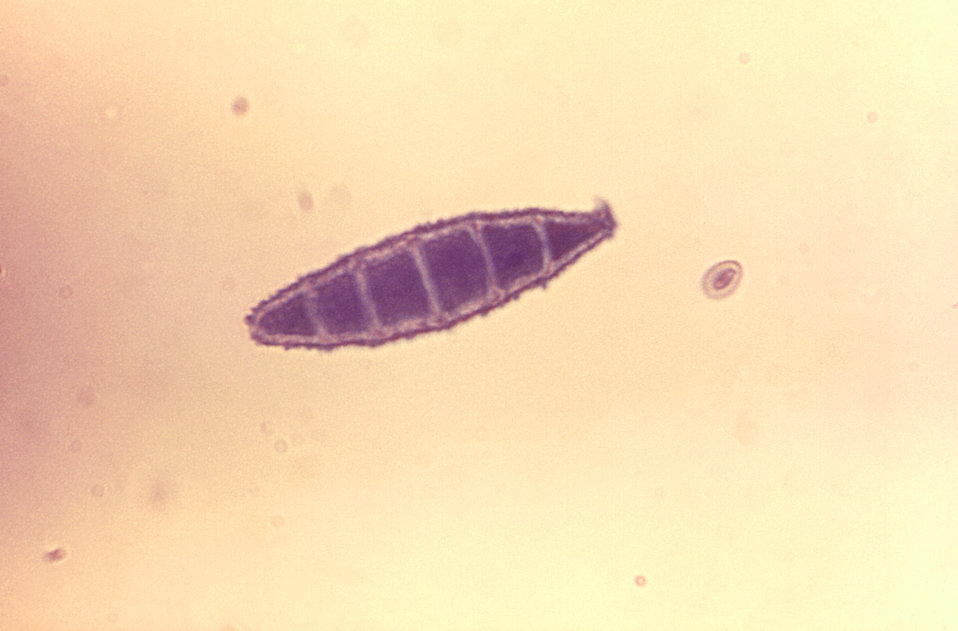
Under a high magnification of 970X, this photomicrograph depicted some of the ultrastructural features of a single oblong-shaped Microsporum gypseum macroconidium.